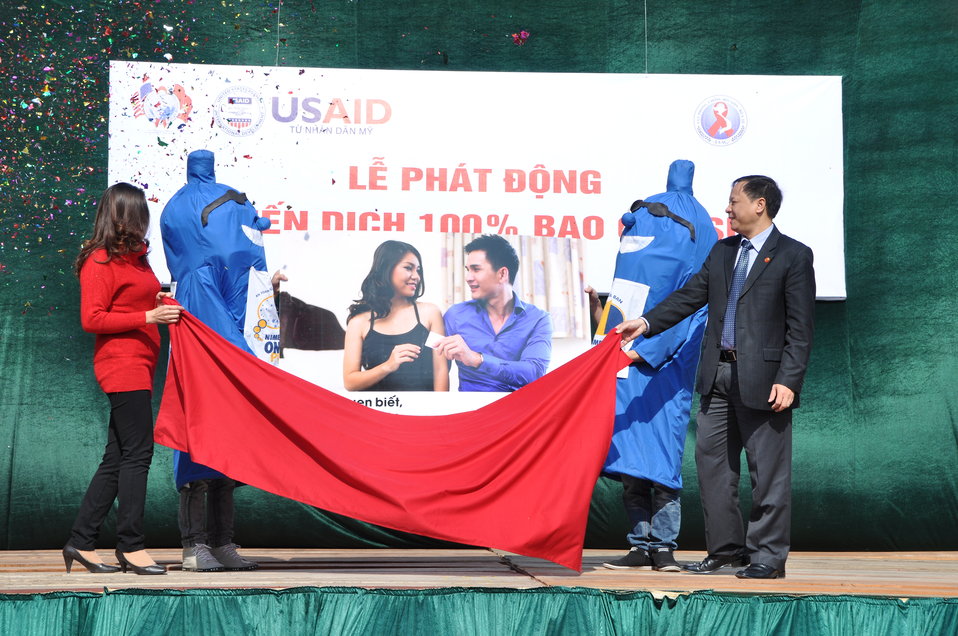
100% Condom Use Campaign Launch, Dec. 2, 2011